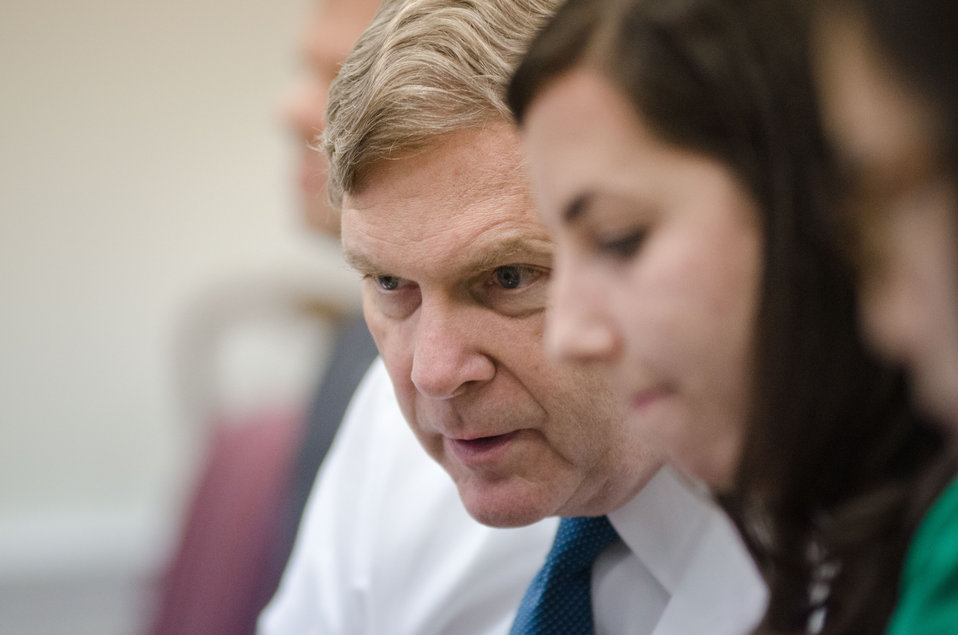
Agriculture Secretary Tom Vilsack, (left), composes an Twitter message, that will be posted by New Media Content Specialist Rebecca Frank (right, during his live and online Virtual Office Hours Twitter session, in Washington, D.C. on, Monday, December, 17, 2012. Online questions about the important role of rural America to the national and global economy, increasing agricultural opportunities in U.S. communities, and the importance of passing a five-year Farm Bill are addressed during this live Twitter chat. Some of the responses address food and nutrition, agricultural research, urban agriculture, bio-based products and how rural communities can get more involved in rural policy, to name a few. Questions were submitted live and in advance to the @USDA Twitter account using the hashtag #AskUSDA.